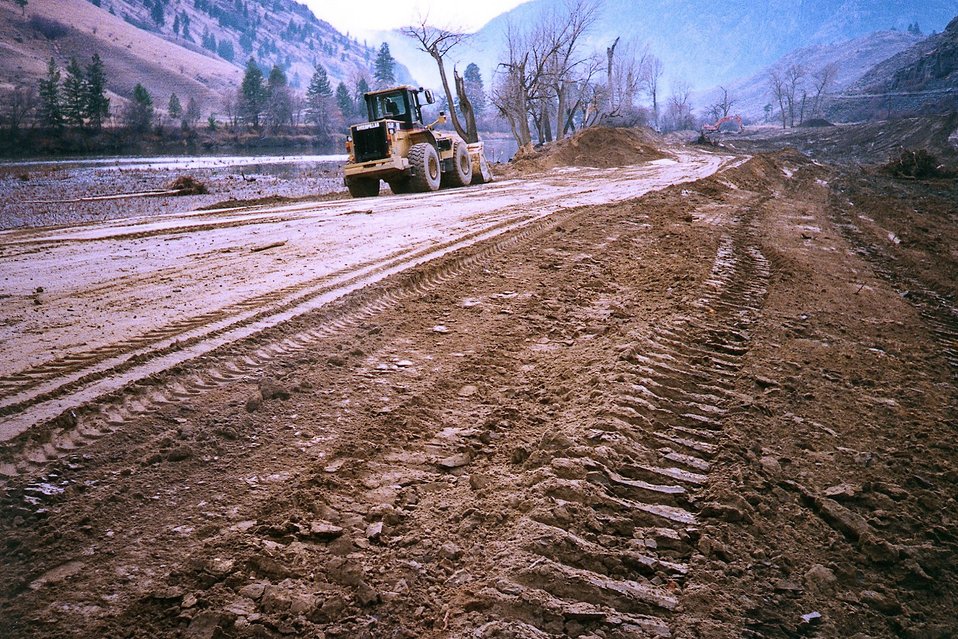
AML. Kaaba-Texas Mine tailings.